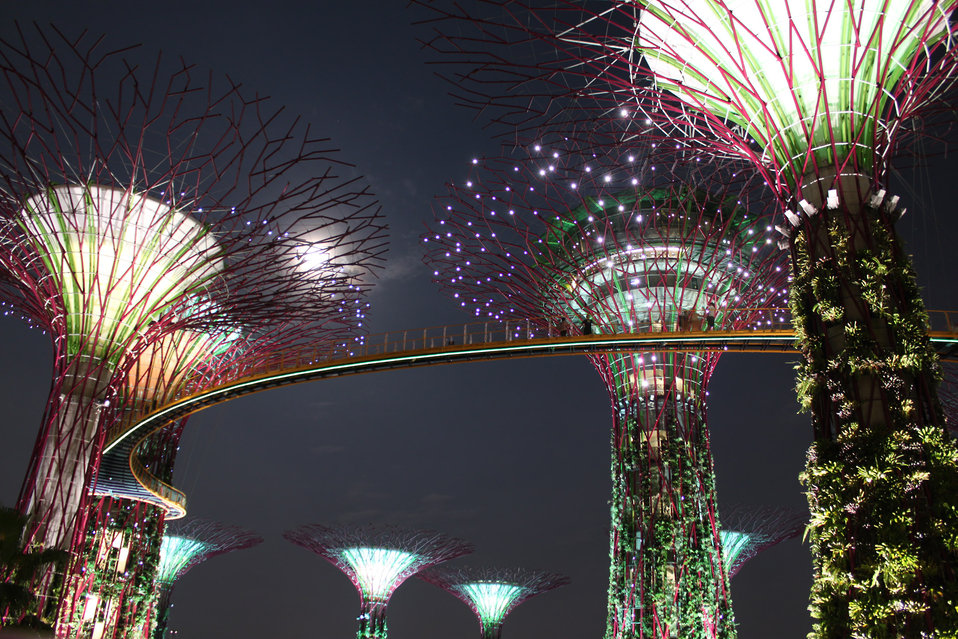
Giant tree night view.